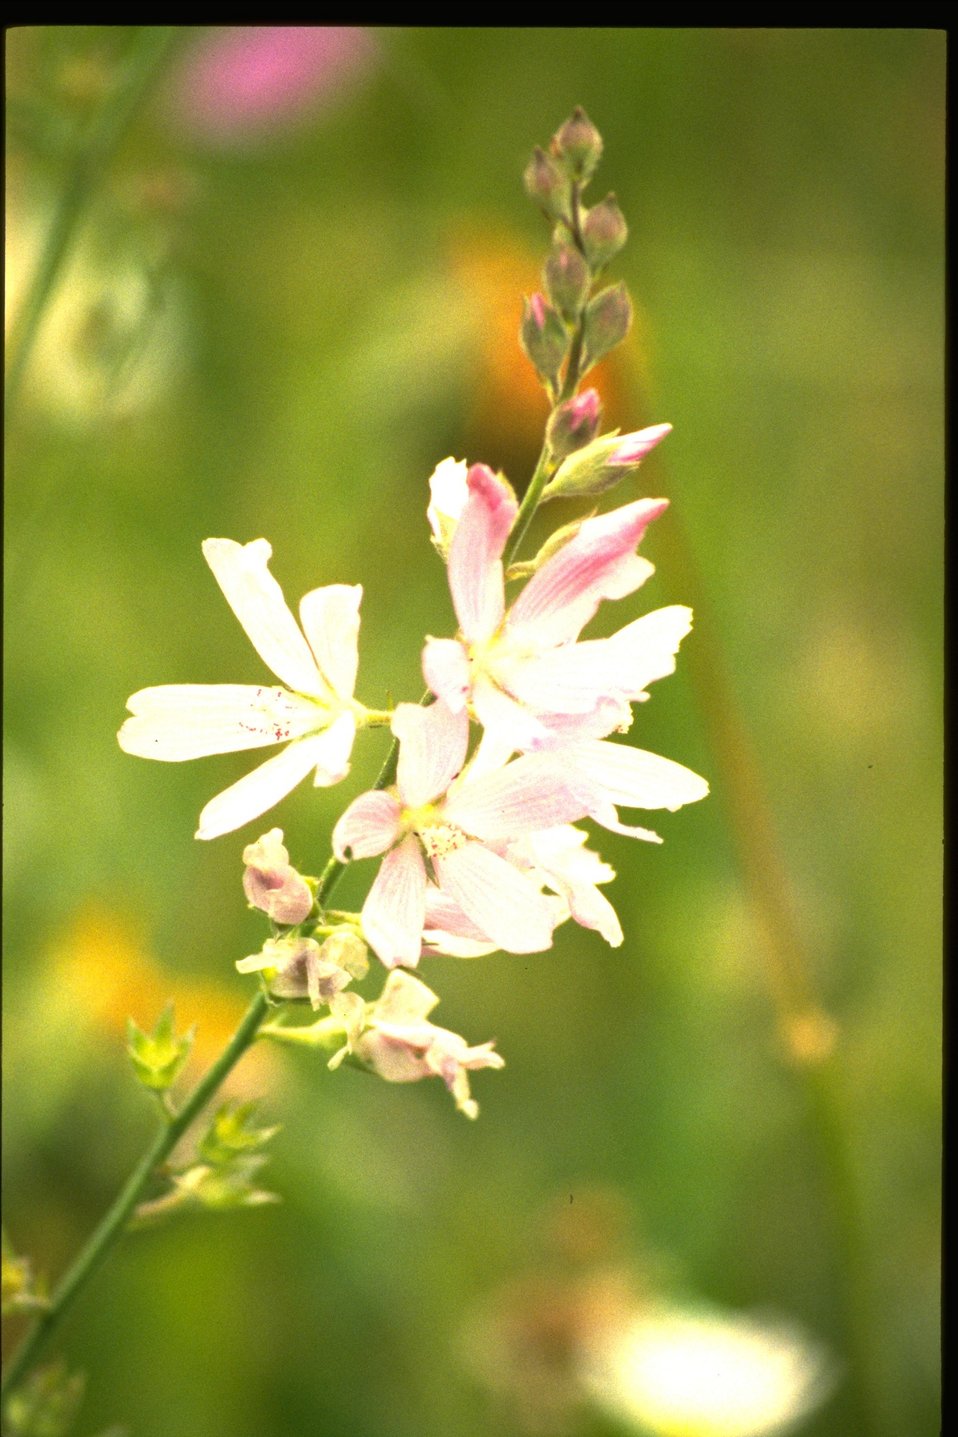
Medium shot of Sidalcea.